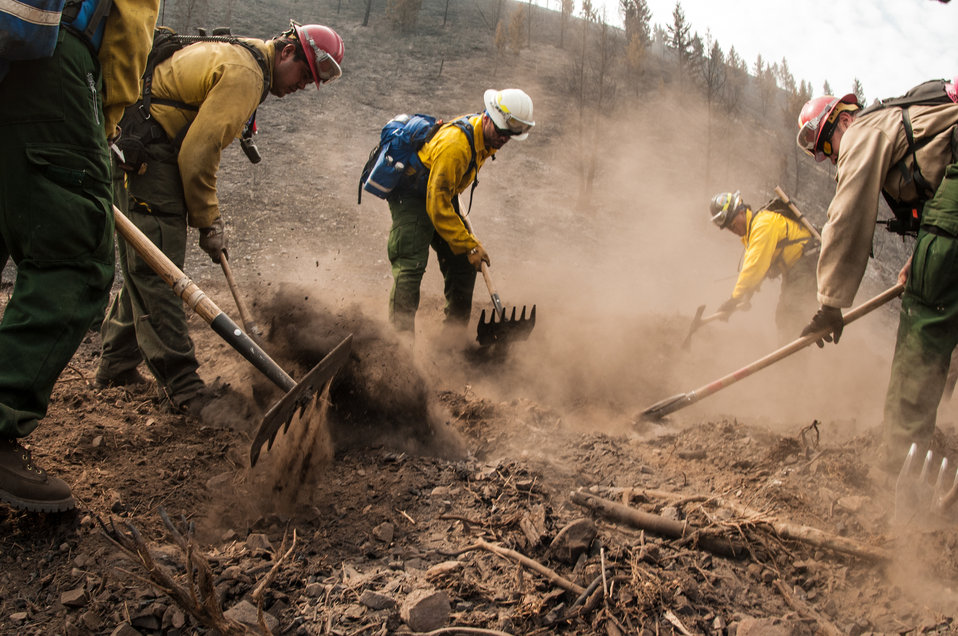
Southern Plains and Comanche Type 2 Initial Attack Crews and an Engine Crew work together to extinguish underground smoldering fires in roots or buried tree limbs, using a variety of hand tools and fire suppressing foam, during the Beaver Creek Fire, west of Hailey, ID, on Wednesday, Aug 21, 2013.